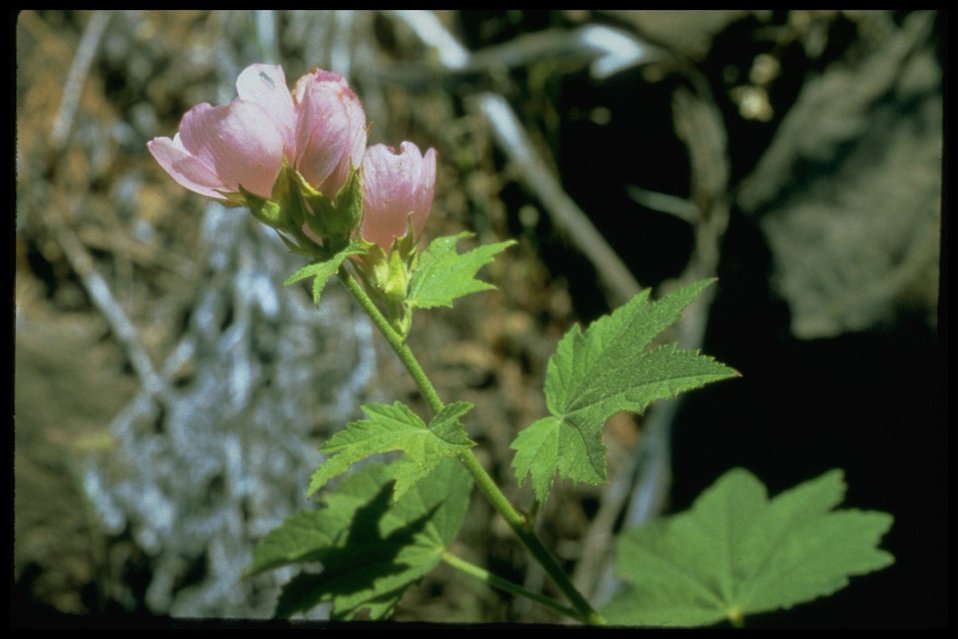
Medium shot of California globe mallow (Iliamna latibracteata).